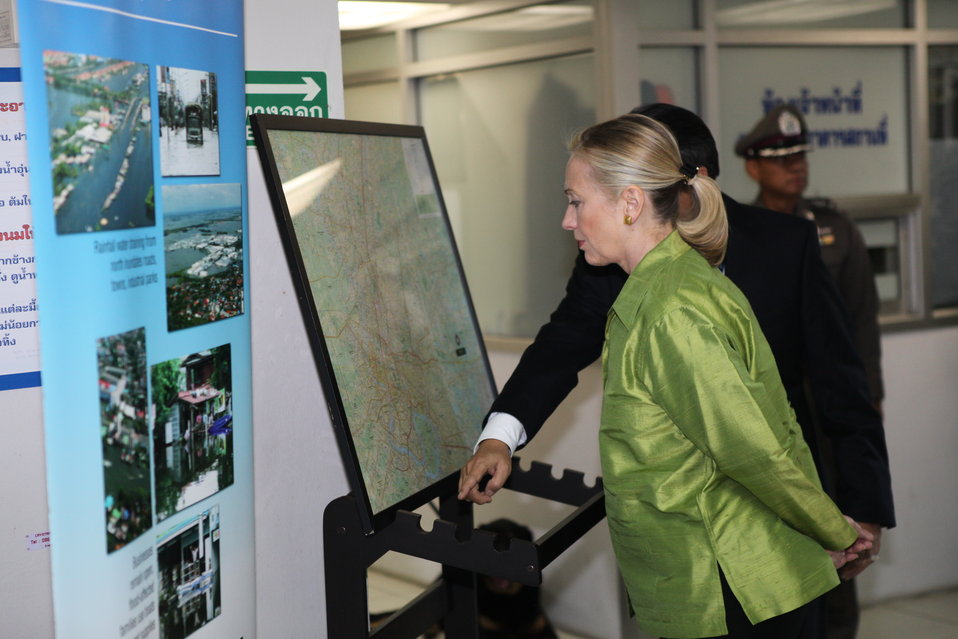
Secretary Clinton Looks at a Presentation of Flood Damage

U.S. Secretary of State Hillary Rodham Clinton looks at a presentation of the flood damage in Thailand and U.S. flood assistance at a temporary evacuation site at the Sports Center Rajamangala Stadium in Bangkok, Thailand, on November 17, 2011.